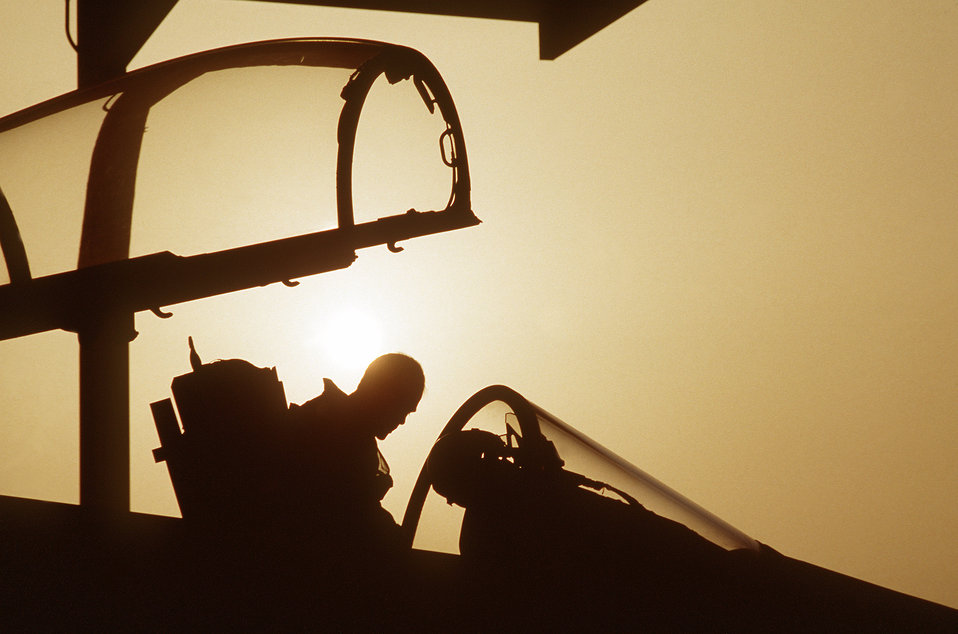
F-15C Eagle

1990's -- The pilot of a 1st Tactical Fighter Squadron F-15C Eagle aircraft is silhouetted against the sun as he climbs into the cockpit of his aircraft during Operation Desert Shield.